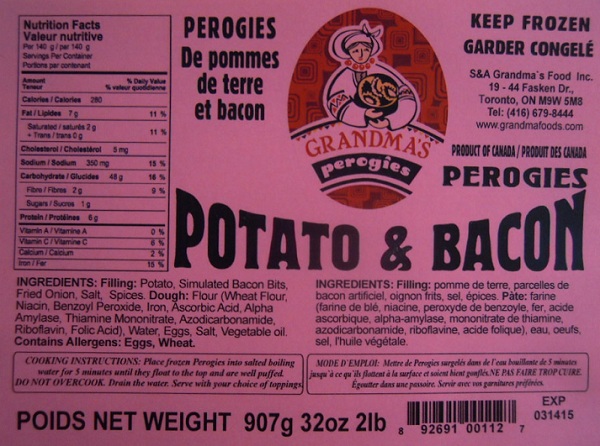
RECALLED – Potato and Bacon Perogies

April 8, 2013 – Product Recall – Buffalo Sav Inc. Issues Allergy Alert On Undeclared Soy In “Grandma's Perogies Potato & Bacon Perogies”.